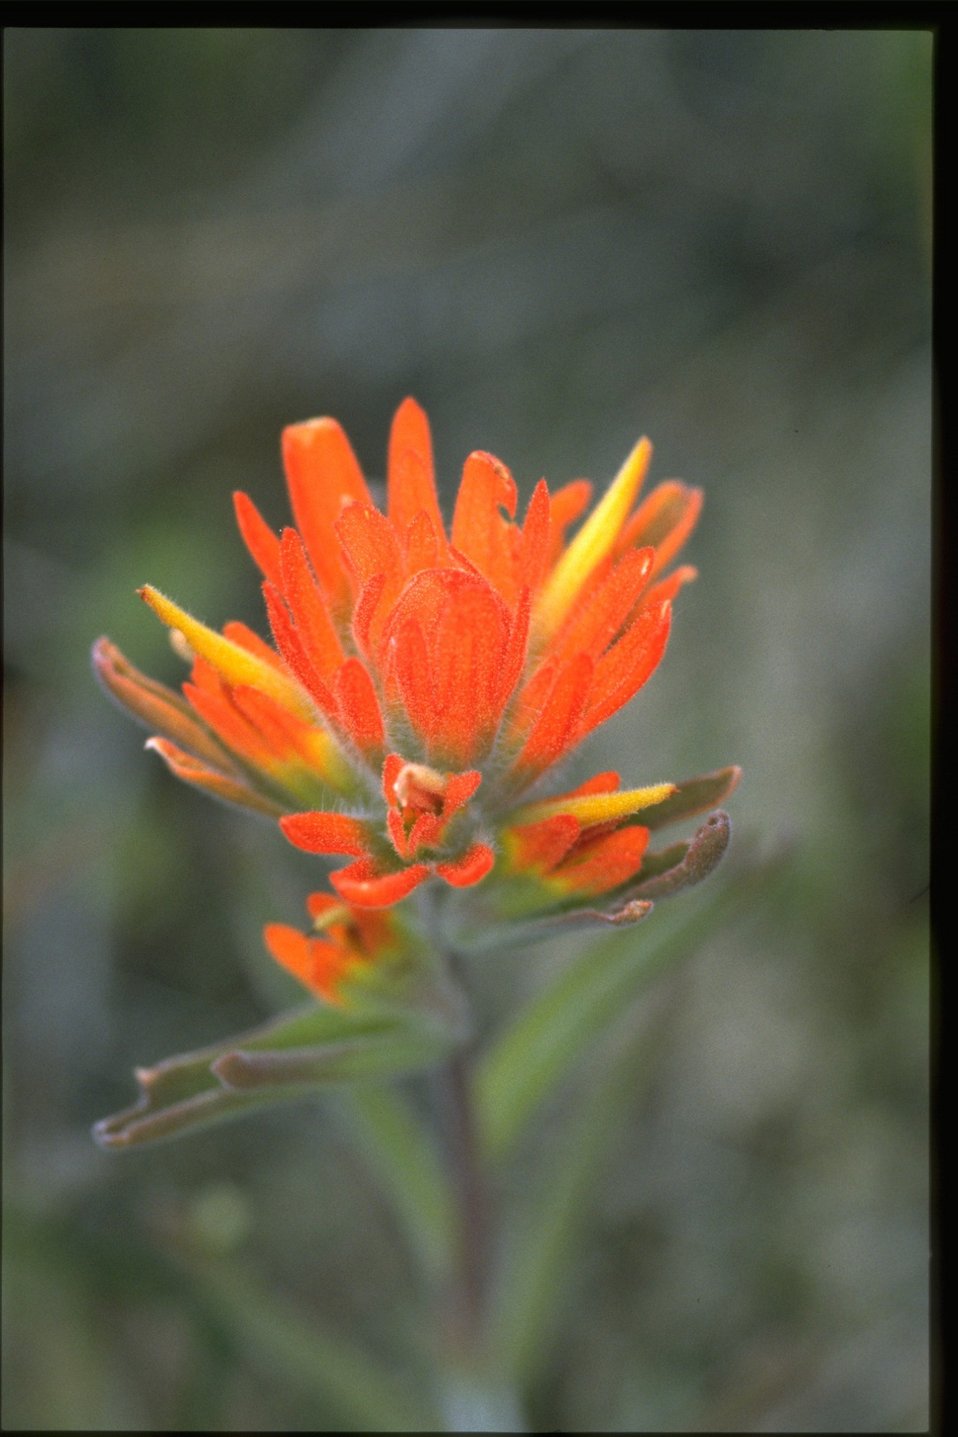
Closeup shot of Castilleja.